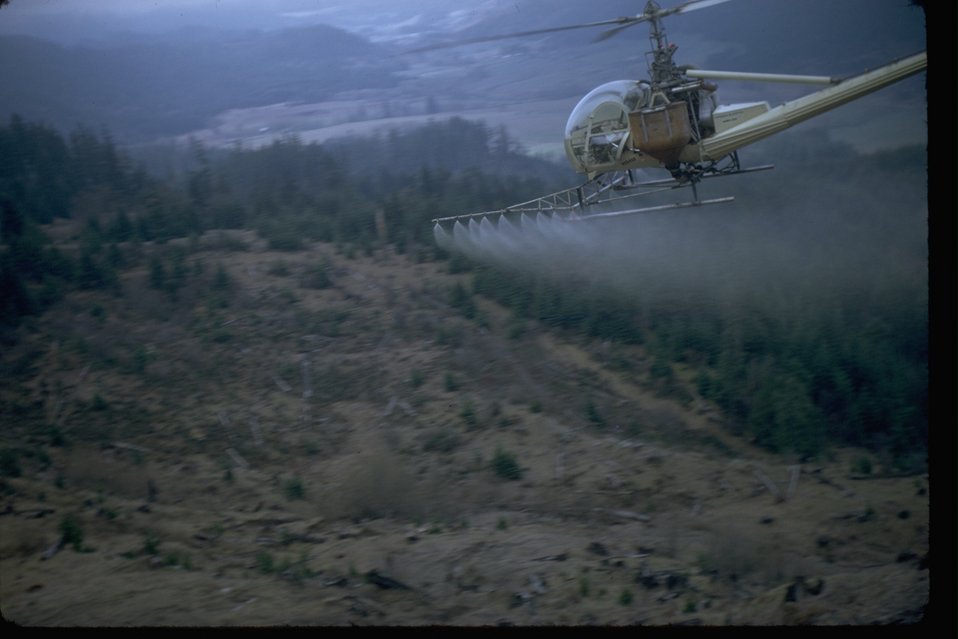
Helicopter herbicide spray operations in a clear cut area.